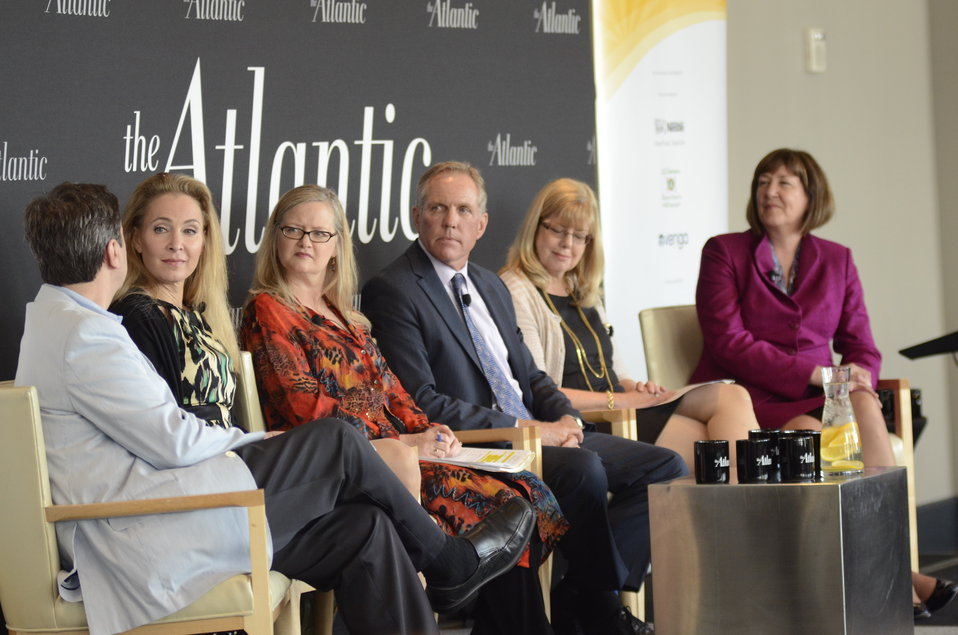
At the 3rd Annual Food Summit, guest panelists (L to R) Senior Vice President, Nutrition Group, Dole Jennifer Grossman, Director, Nutrition Policy, Center for Science in the Public Interest Margo Wootan, Executive Director, World Fit Foundation Gary Hall, a Representative from the Children’s Food and Beverage Advertising, Better Business Bureau, and Chief Executive Officer, The Gerber Products Company, and Regional Business Head, Nestlé Infant Nutrition, North America Marilyn Knox discuss Learning at a Young Age: Childhood Nutrition and the Obesity Epidemic Billion at the W Hotel in Washington, D.C. on Thursday, May 24, 2012.